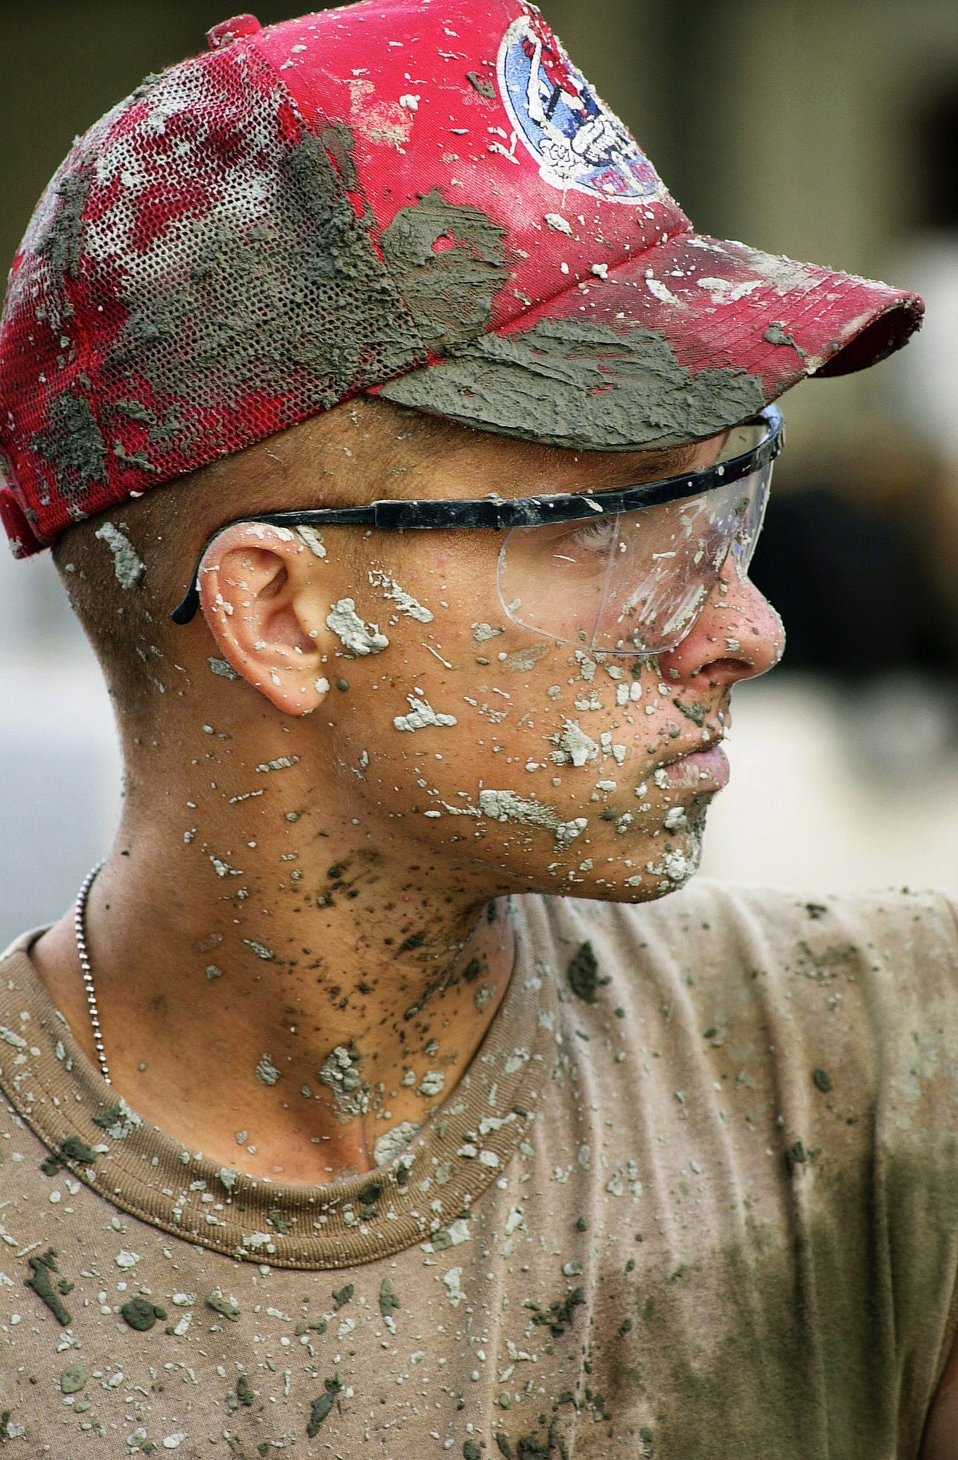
Dirty work

IN SAINT LUCIA -- Airman 1st Class Phillip Davis of the 820th Red Horse Squadron, Nellis Air Force Base, Nevada, has the rigors of pouring cement splattered all over his face. Approximately 100 U.S. Marines, soldiers and airmen have deployed to Saint Lucia as part of exercise New Horizons. The exercise has a two fold mission of readiness training and humanitarian assistance in the Caribbean and Latin America.